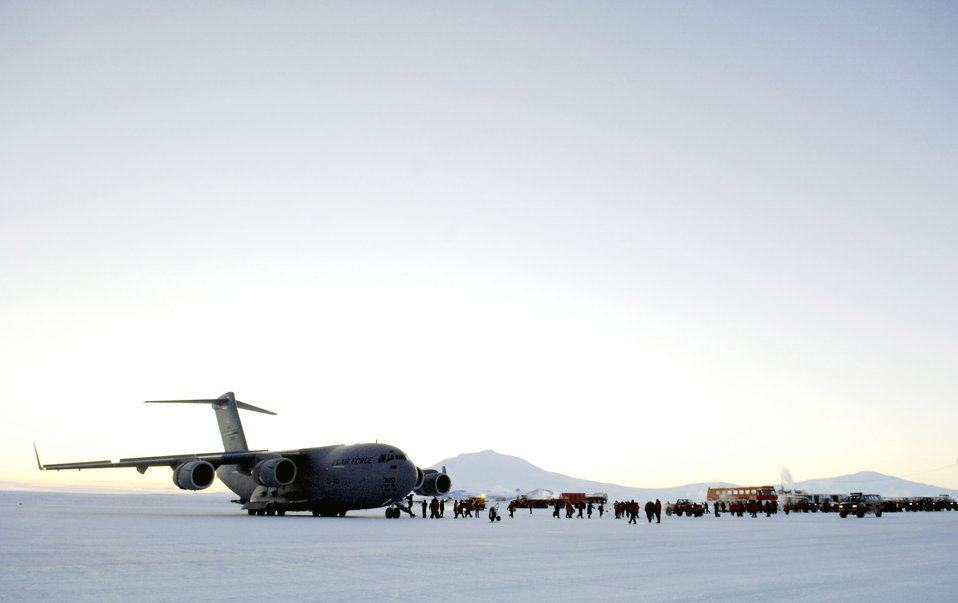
Operation Deep Freeze 2007-08 begins

National Science Foundation members get off a C-17 Globemaster III after a winter fly-in mission for Operation Deep Freeze Aug. 20 at Pegasus Runway in Antarctica. A C-17 and 31 Airmen from McChord Air Force Base, Wash., began the annual winter fly-in augmentation of scientists, support personnel, food and equipment for the U.S. Antarctic Program at McMurdo Station. WinFly is the opening of the first flights to McMurdo Station, which closed for the austral winter in February.